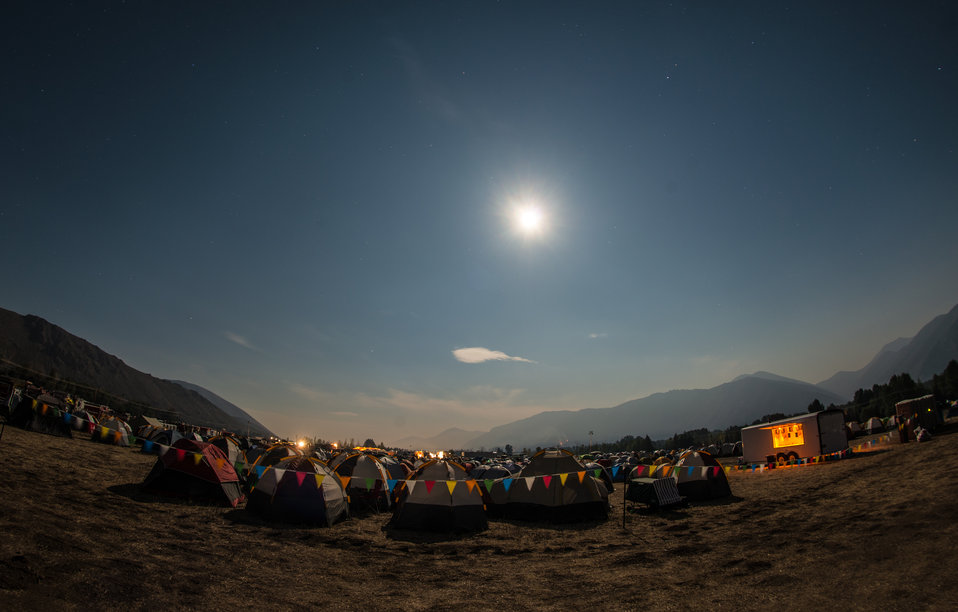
A bright moon shines on the tents of wildlands firefighters who have come from across the nation to fight the Beaver Creek Fire; and now the day shift is getting their prescribed crew rest before waking up at 5 AM to begin their day at the Incident Command Post campgrounds in Hailey, ID, on Tuesday, Aug 20, 2013.